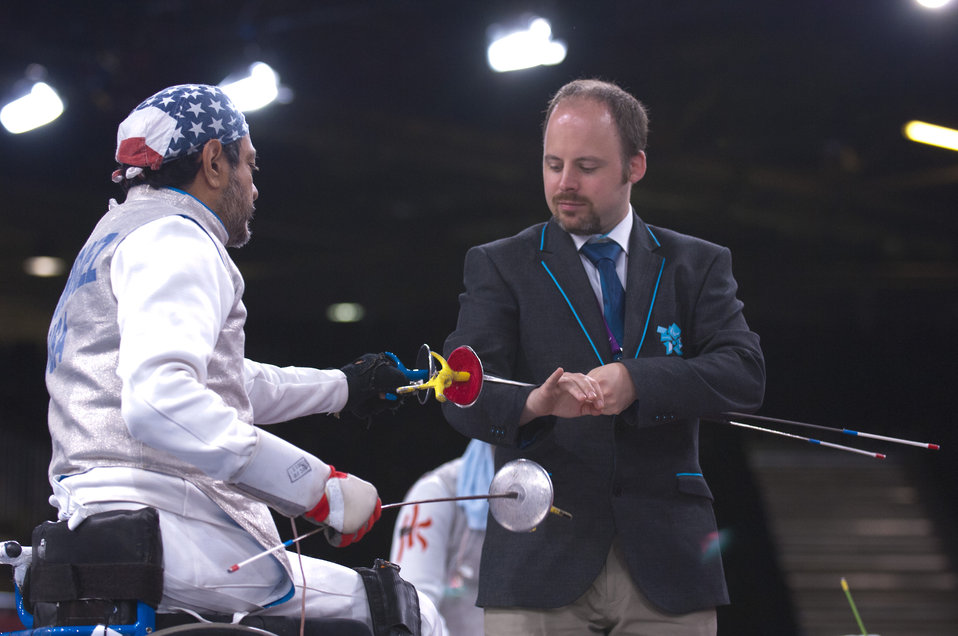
af veteran fencer

Former Air Force Staff Sgt. Mario Rodriguez, left, a member of the 2012 U.S. Paralympic fencing team, selects his weapon before the start of a bout at London's ExCel Centre during the Paralympic Games, Sept. 4, 2012.